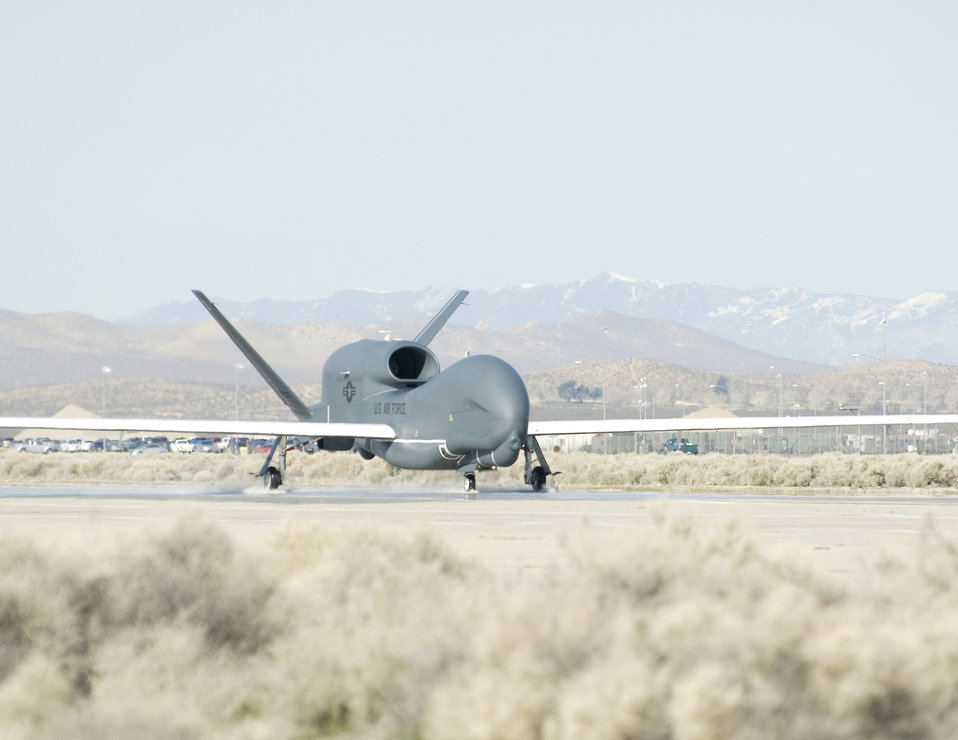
Global Hawk wet runway testing yields positive results

A RQ-4 Global Hawk completes a wet runway test March 12, 2010, at Edwards Air Force Base, Calif. Members of the 452nd Flight Test Squadron will wrap up its Block 20 wet runway testing around the beginning of April.